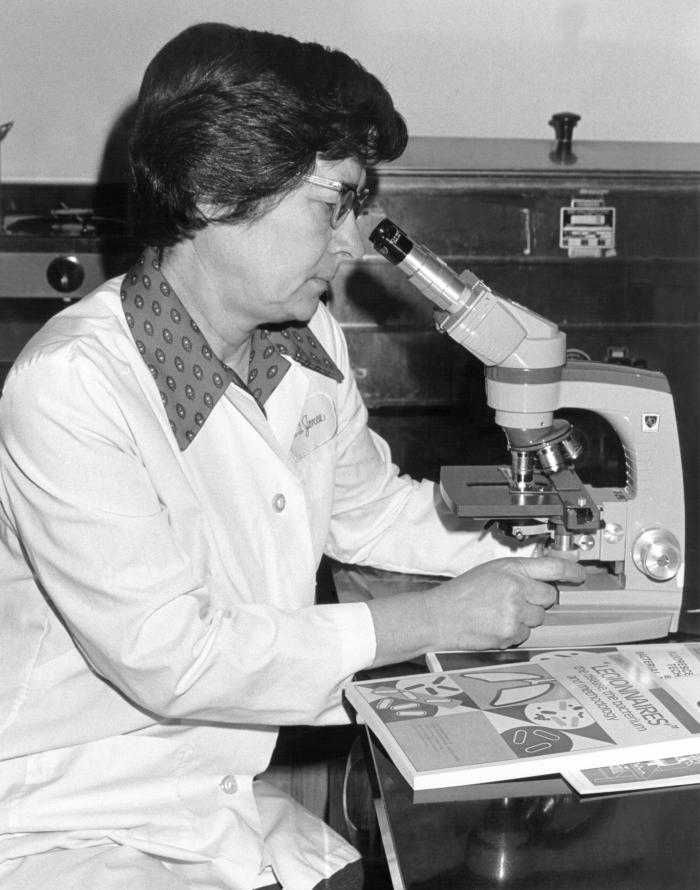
This scientist is looking into a microscope at during a 1980 Legionnaire's disease study.